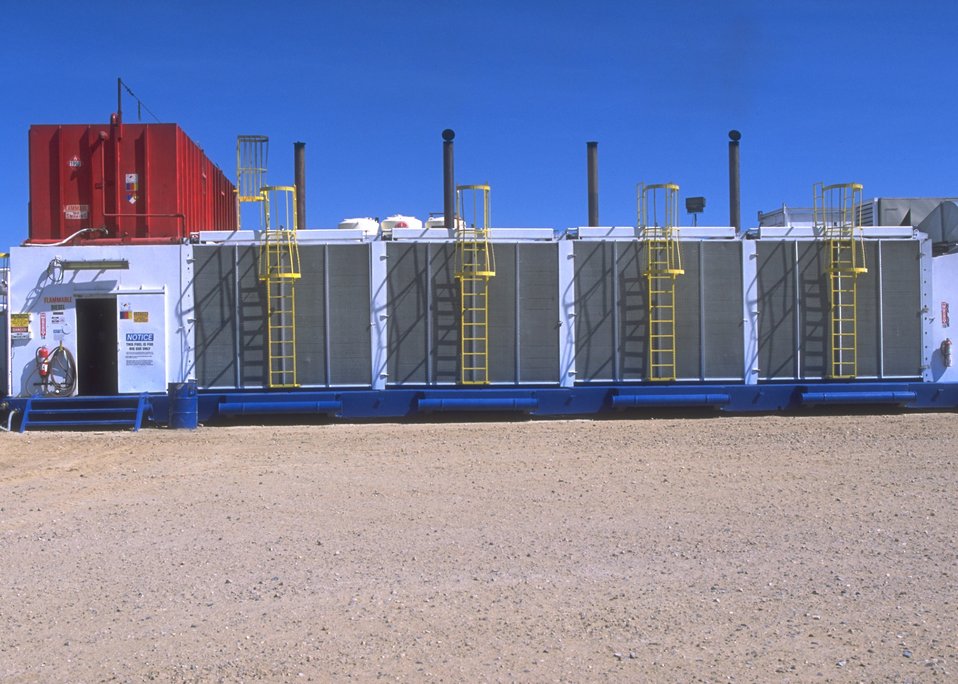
Supporting facilities on the Burlington Northern deep well rig, Casper Field Office.